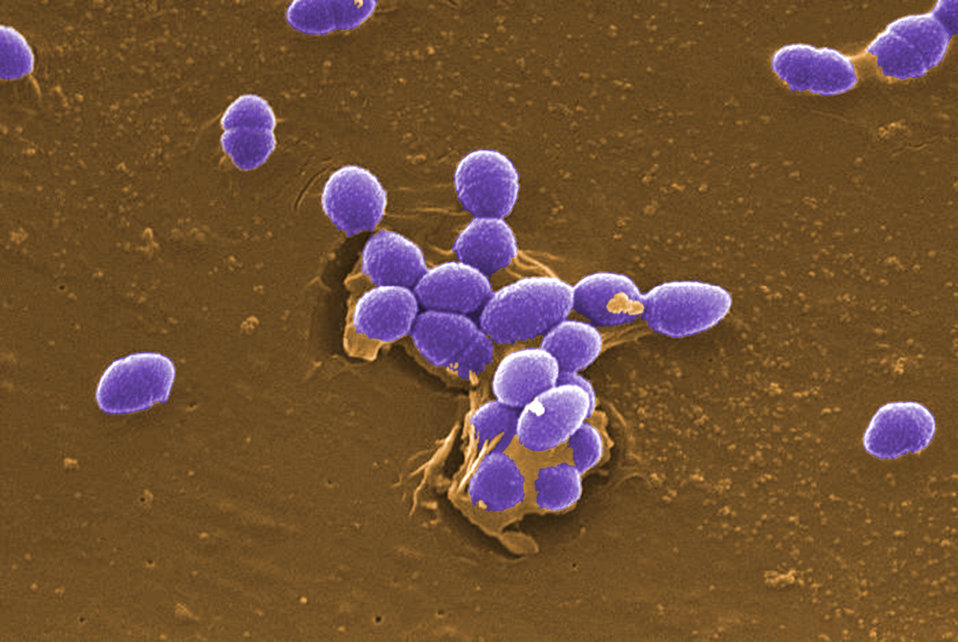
This digitally-colorized scanning electron micrograph (SEM) depicted large numbers of Gram-positive Enterococcus faecalis sp. bacteria.